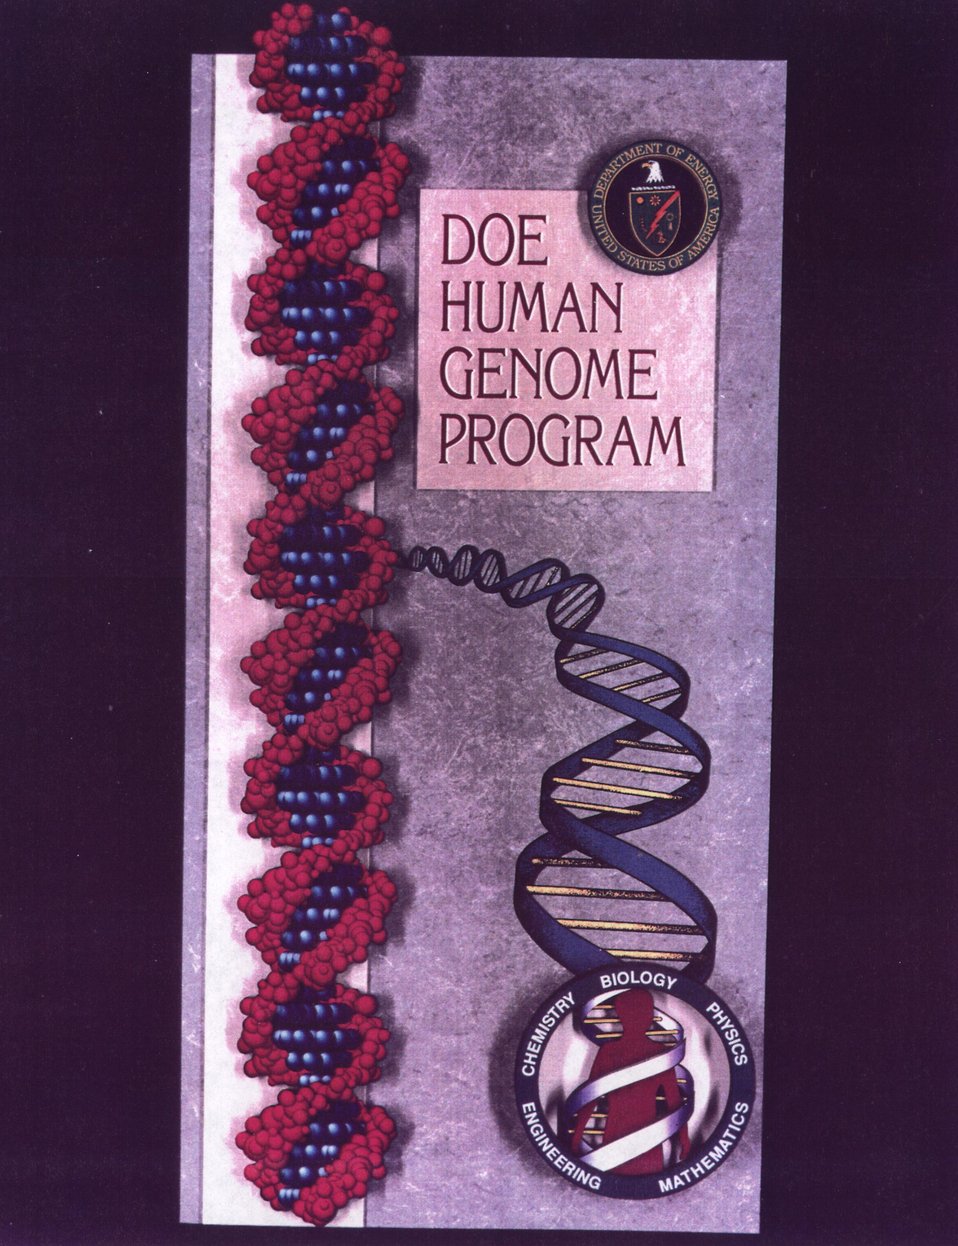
DOE Human Genome Program.